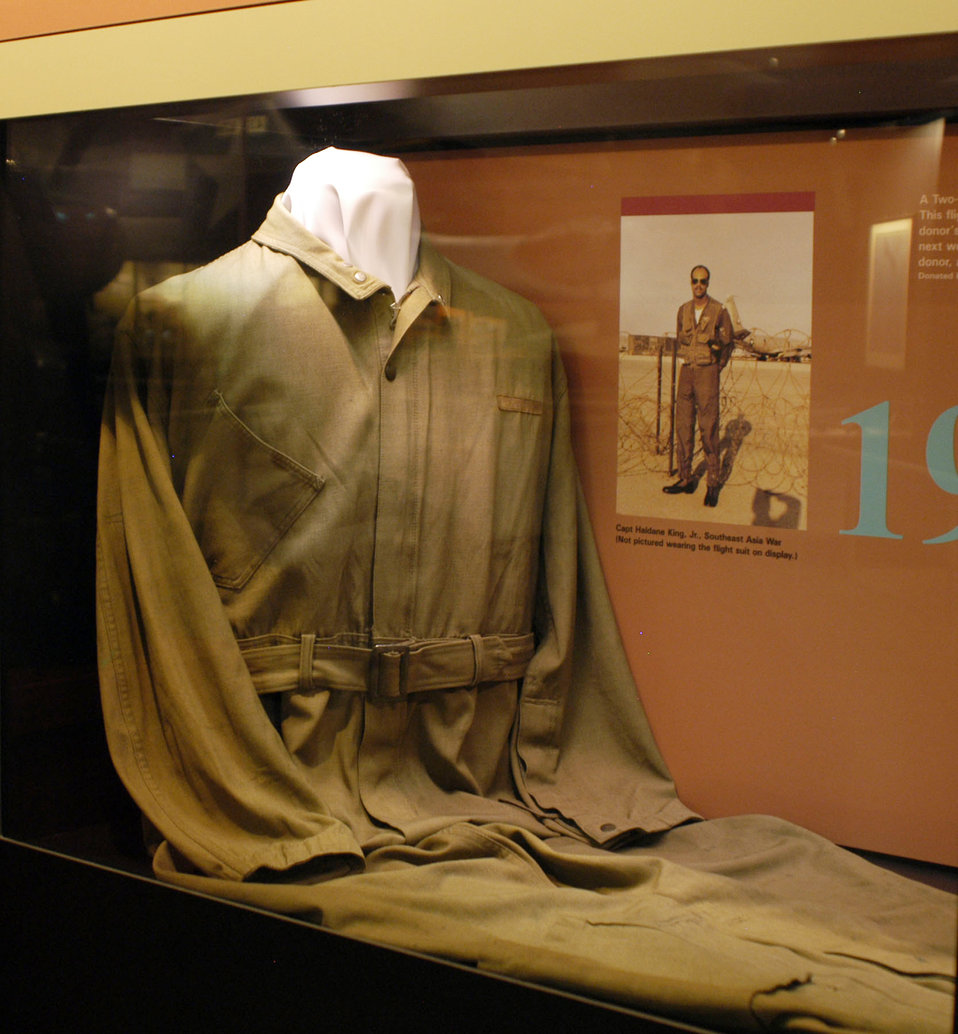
Families always have been essential to the Air Force

A flightsuit worn in two different wars by a father and son combination is on display in the Air Power Gallery at the National Museum of the U.S. Air Force in Dayton, Ohio. The suit was worn by a father during World War II and his son during the Vietnam War.